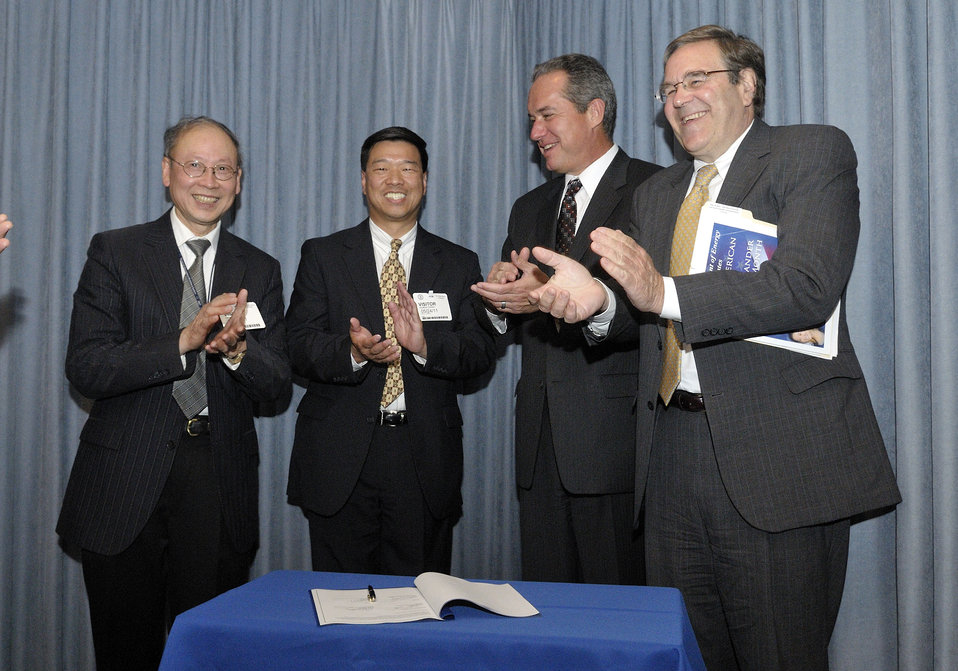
AAPI Heritage Month 2011 (2)